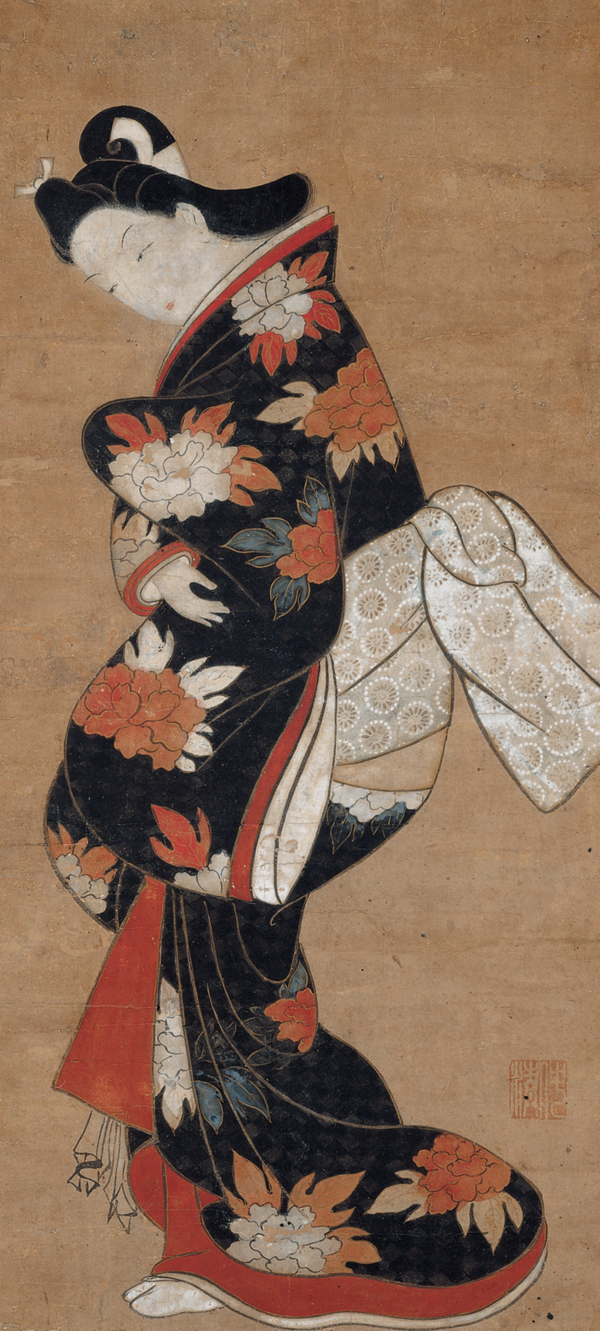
'Beauty in a Black Kimono' by Torii Kiyonobu, c. 1710–20